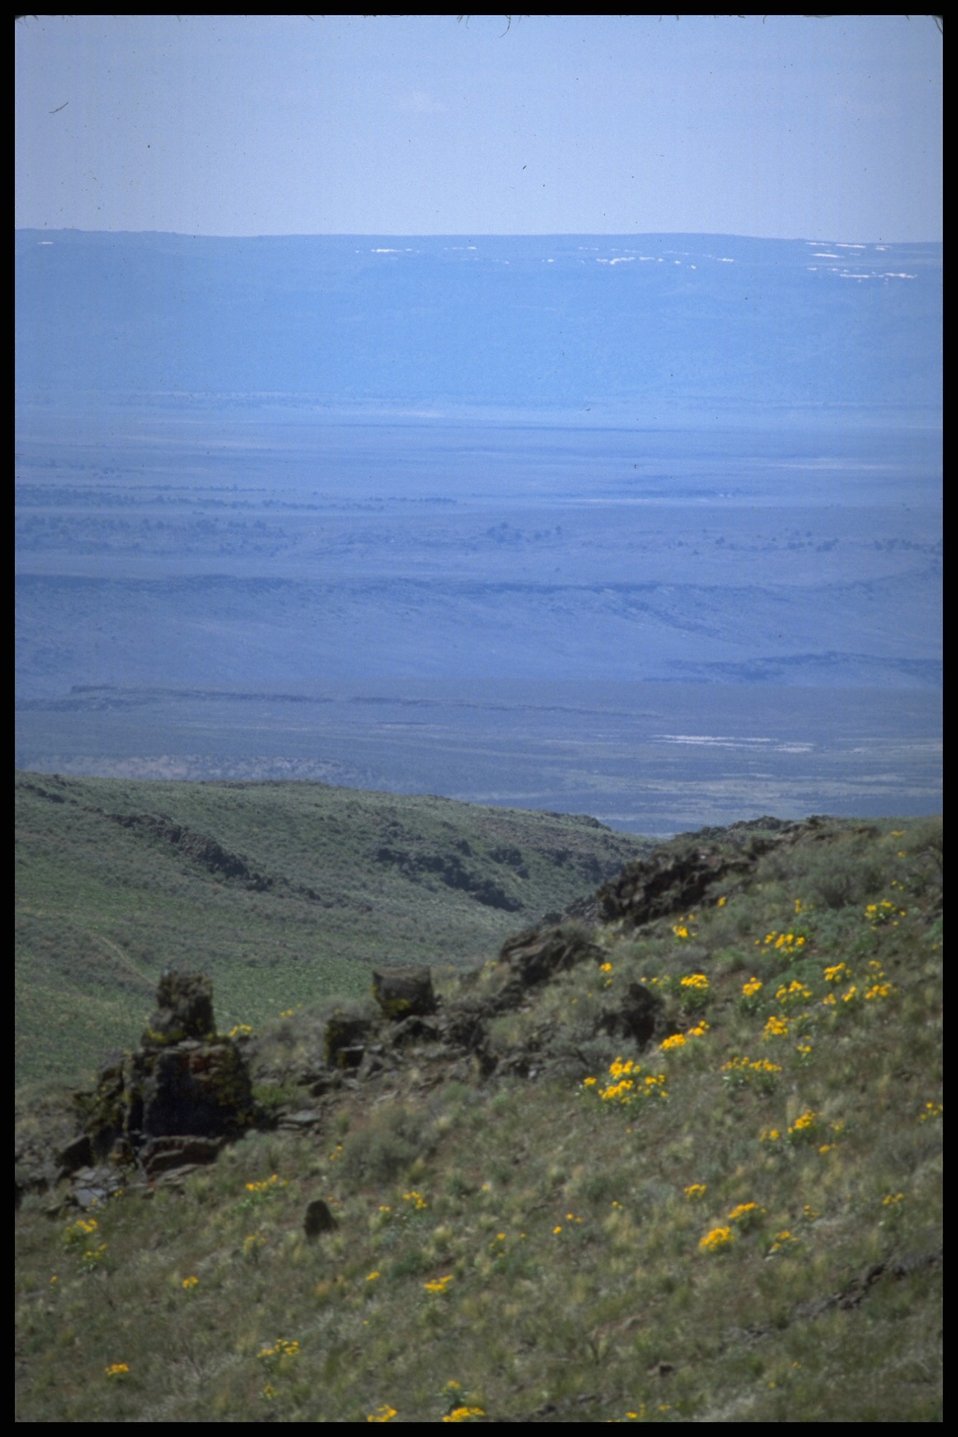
Scenic view from Beaty Butte, Lakeview District.